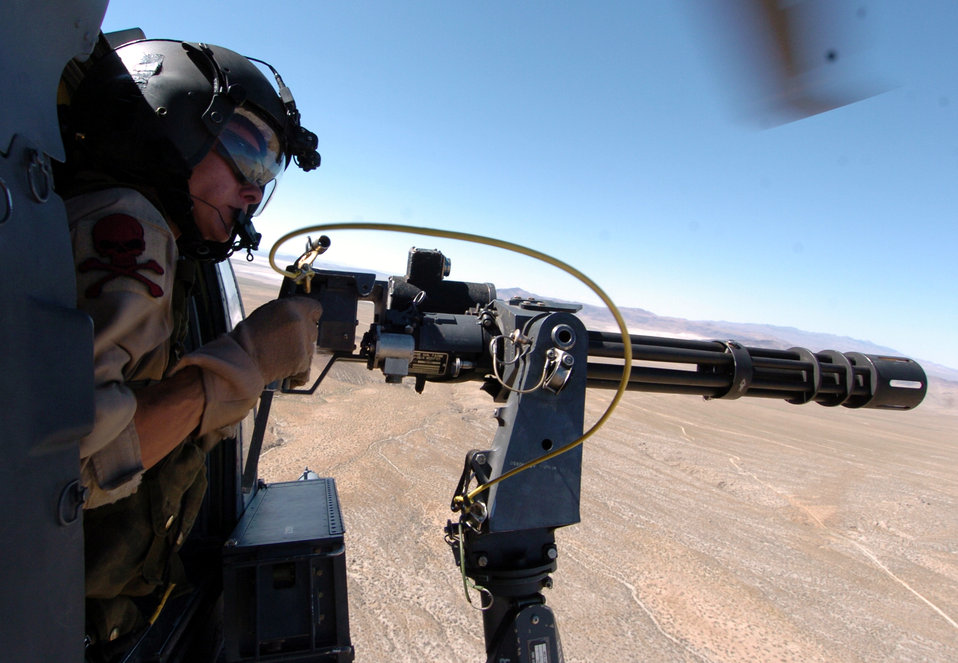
Combat search

OVER FALLON, Nev. -- Airman 1st Class Melody Boates simulates firing a 7.62 mini-gun from an HH-60G Pave Hawk during exercise Desert Rescue here July 12. Desert Rescue is a multi-service, multi-national training exercise held annually to prepare combat search and rescue teams. Airman Boates is assigned to the 41st Rescue Squadron at Moody Air Force Base, Ga.